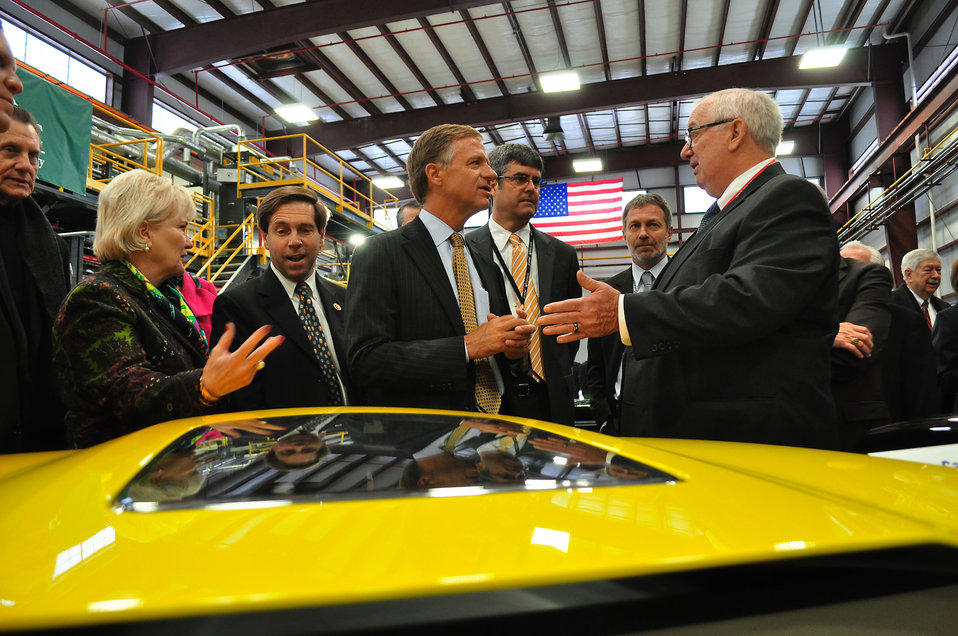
Carbon Fiber Technology Facilty Open House Oak Ridge Tennessee

13-025 DOE photo Lynn Freeny